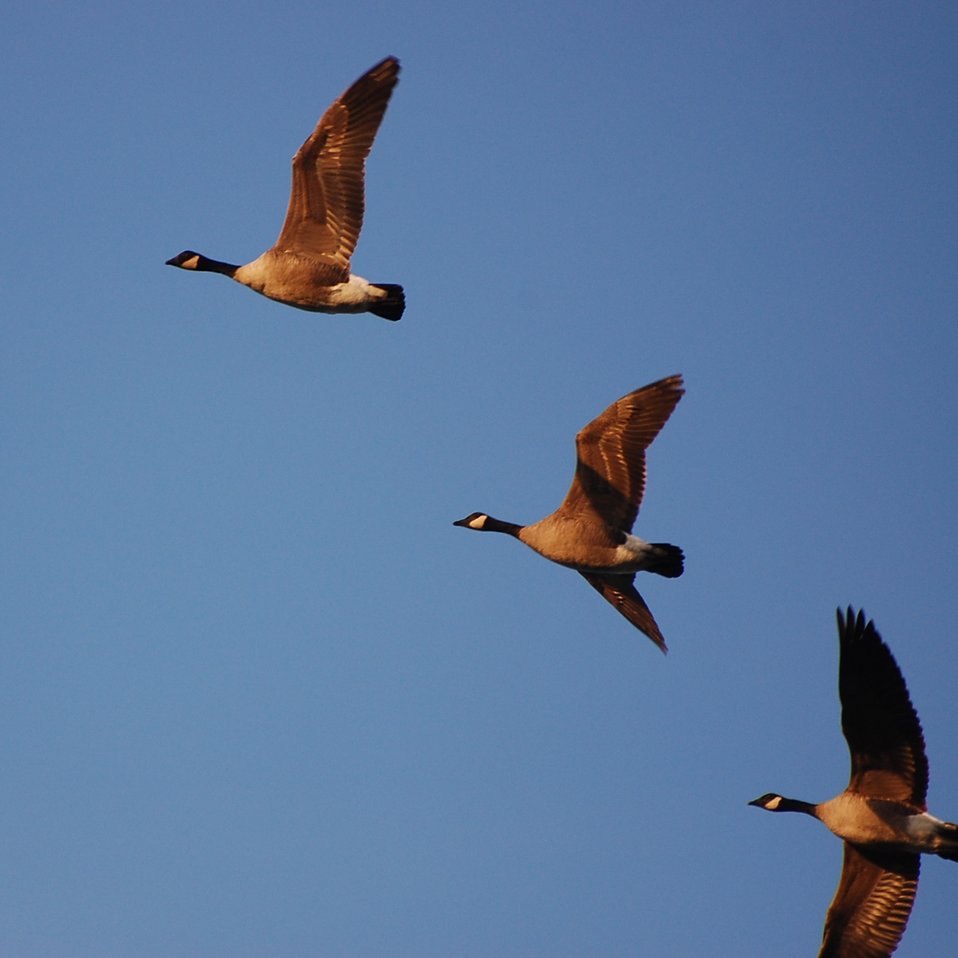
Cackling geese at Izembek Lagoon

Izembek National Wildlife Refuge